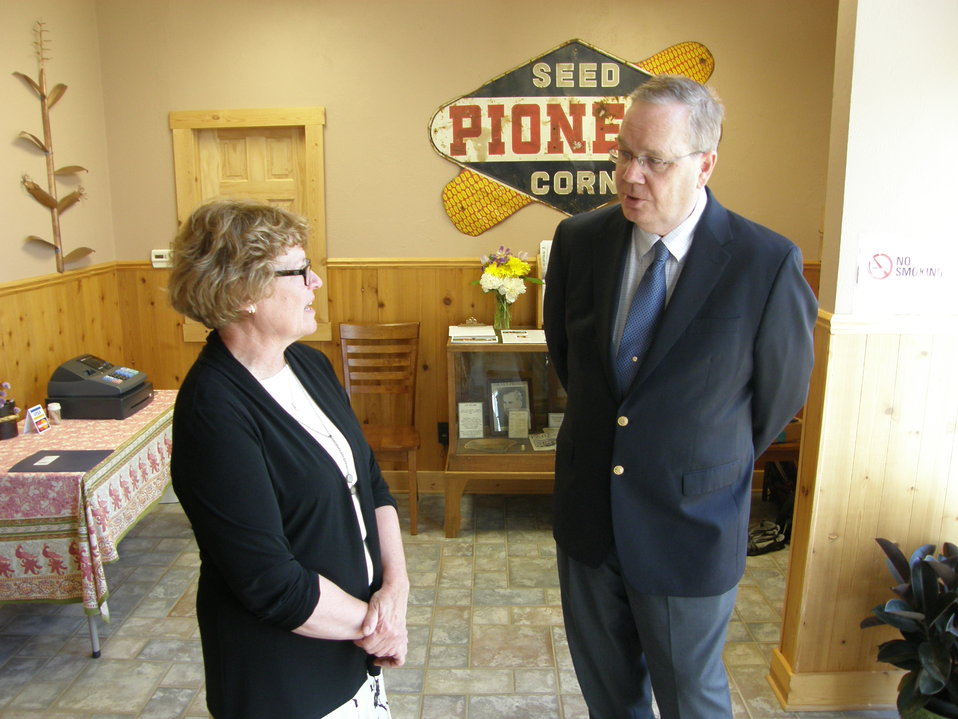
Agriculture Under Secretary for Rural Development Dallas Tonsager visited the birthplace of Agriculture Secretary Henry A. Wallace on Tuesday, May 15, 2012. Today was also the 150th anniversary of the U.S. Department of Agriculture. Wallace, perhaps the most well-known Agriculture Secretary, served from March 4, 1933 until September 4, 1940. He also served as Vice President of the United States from 1941 to 1945 under President Franklin D. Roosevelt and Secretary of Commerce from 1945 to 1946.